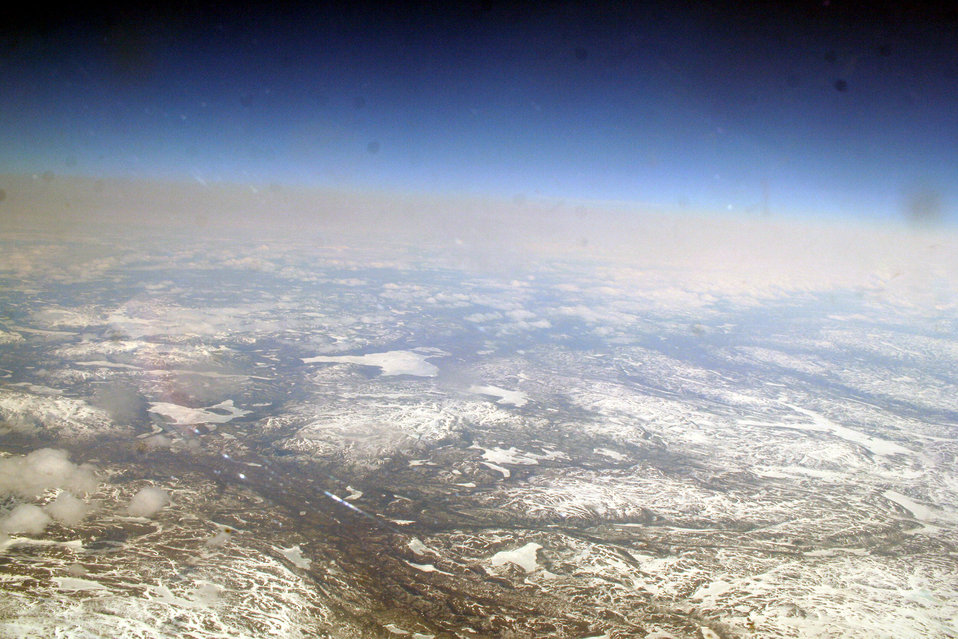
C-5M Completes First Arctic Overflight to Afghanistan

Ice-covered areas are seen from above the Arctic Circle from the window of a C-5M Super Galaxy June 5, 2011, on a mission from Dover Air Force Base, Del. The C-5M's mission was to complete the first Arctic overflight from Dover AFB to Bagram Airfield, Afghanistan. The plane successfully landed at Bagram AF just over 15 hours later June 6, 2011.